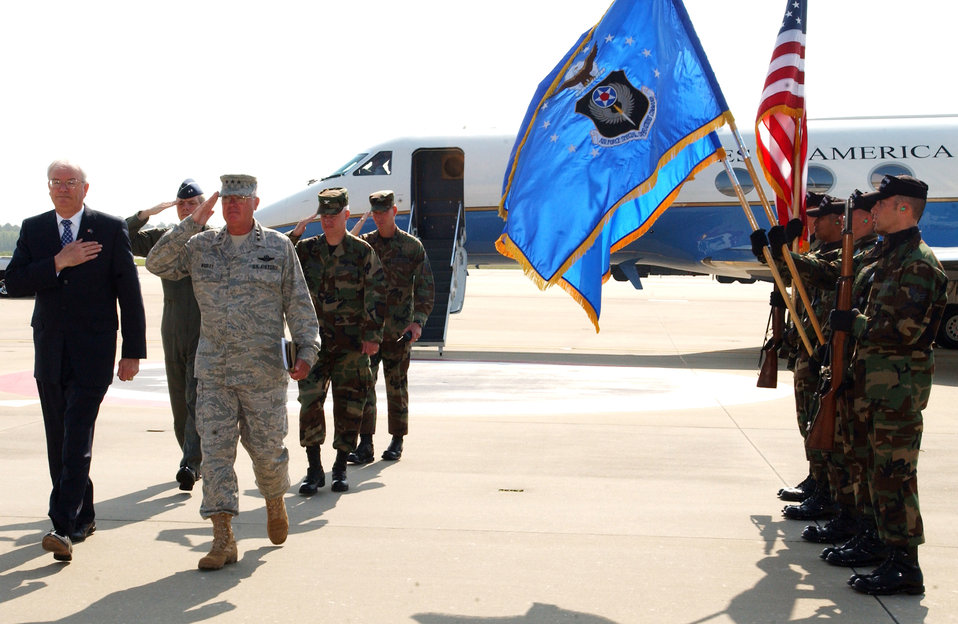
Secretary Wynne tours special ops command

Secretary of the Air Force Michael W. Wynne and Lt. Gen. Michael W. Wooley walk past the honor guard flag detail at Hurlburt Field, Fla., on Tuesday, May 9, 2006. General Wooley is commander of Air Force Special Operations Command there.